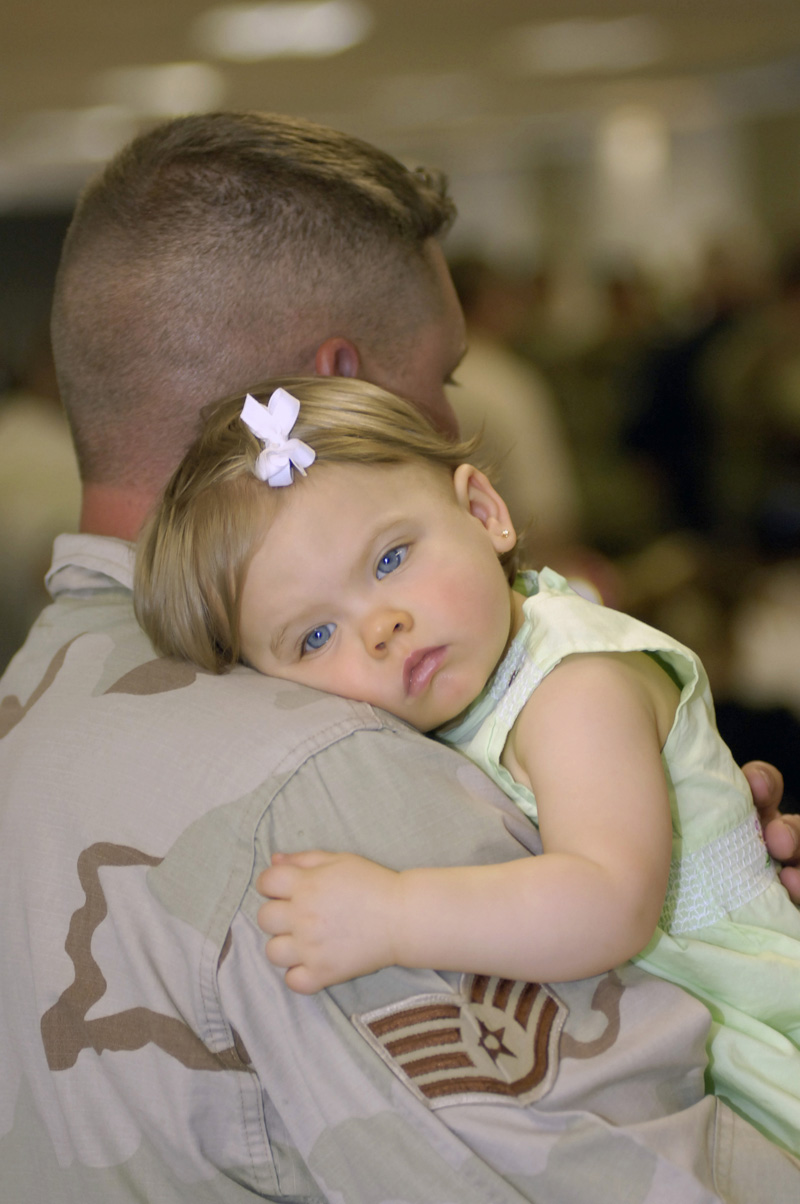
In Dad's arms

Staff Sgt. Ryan Hall holds his daughter on Monday, April 3, 2006, after returning to Charleston Air Force Base, S.C., from a six-month deployment to Camp Bucca, Iraq. Sergeant Hall is with the 437th Security Forces Squadron.